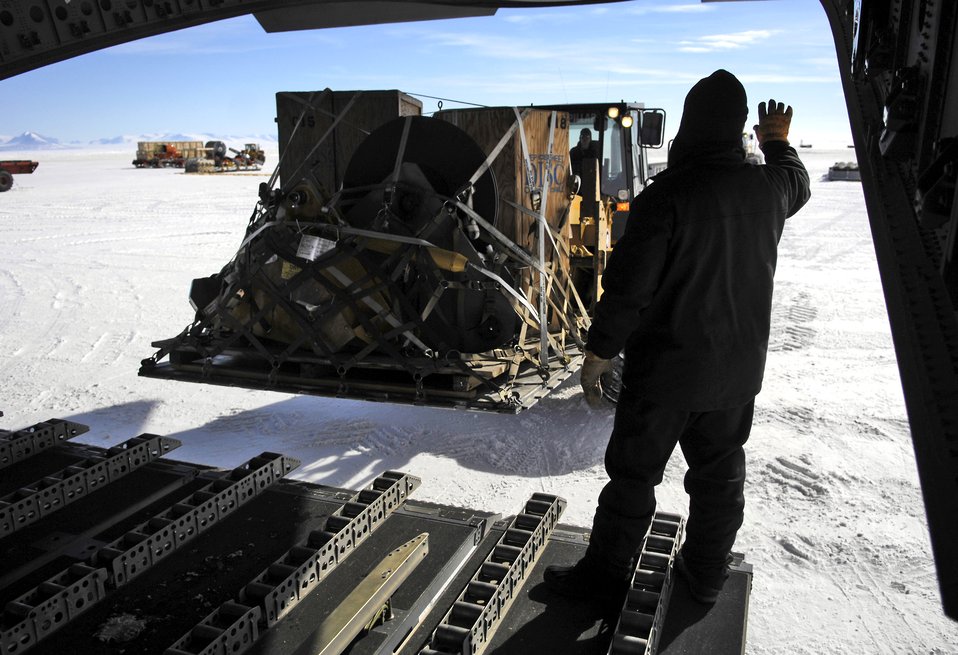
Operation Deep Freeze main season underway

Tech. Sgt. Chris Albertson directs a forklift as it offloads cargo from a C-17 Globemaster III Nov. 27 on the ice runway near McMurdo Station, Antarctica, during Operation Deep Freeze. C-17s fly large cargo loads from Christchurch New Zealand to Antarctica while the LC-130 Hercules, stationed at McMurdo, fly smaller cargo loads to research posts throughout the continent. The C-17s from McChord Air Force Base, Wash. and ski-equipped LC-130s from the New York Air National Guard's 109th Airlift Wing are supporting the 13th Air Force-led Joint Task Force Support Forces Antarctica, operation. Operation Deep Freeze is a unique joint and total-force mission that has supported the National Science Foundation and U.S. Antarctic Program that began in 1955.